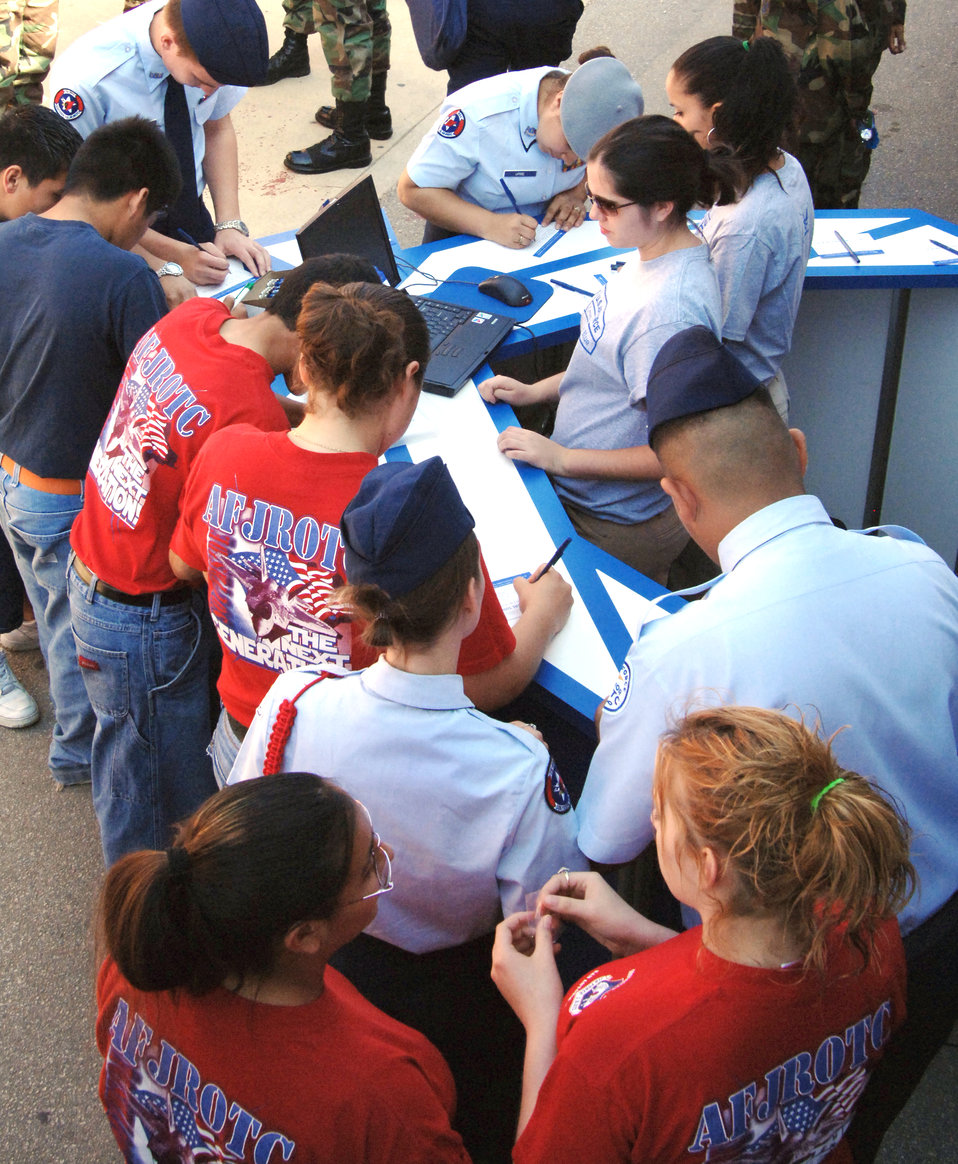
AF Recruiting

Students sign up for information about careers in the Air Force Tuesday, April 4, 2006 at a San Antonio high school. The event had video games and a semi-trailer with a short video shown inside about career opportunities and experiences in the Air Force.